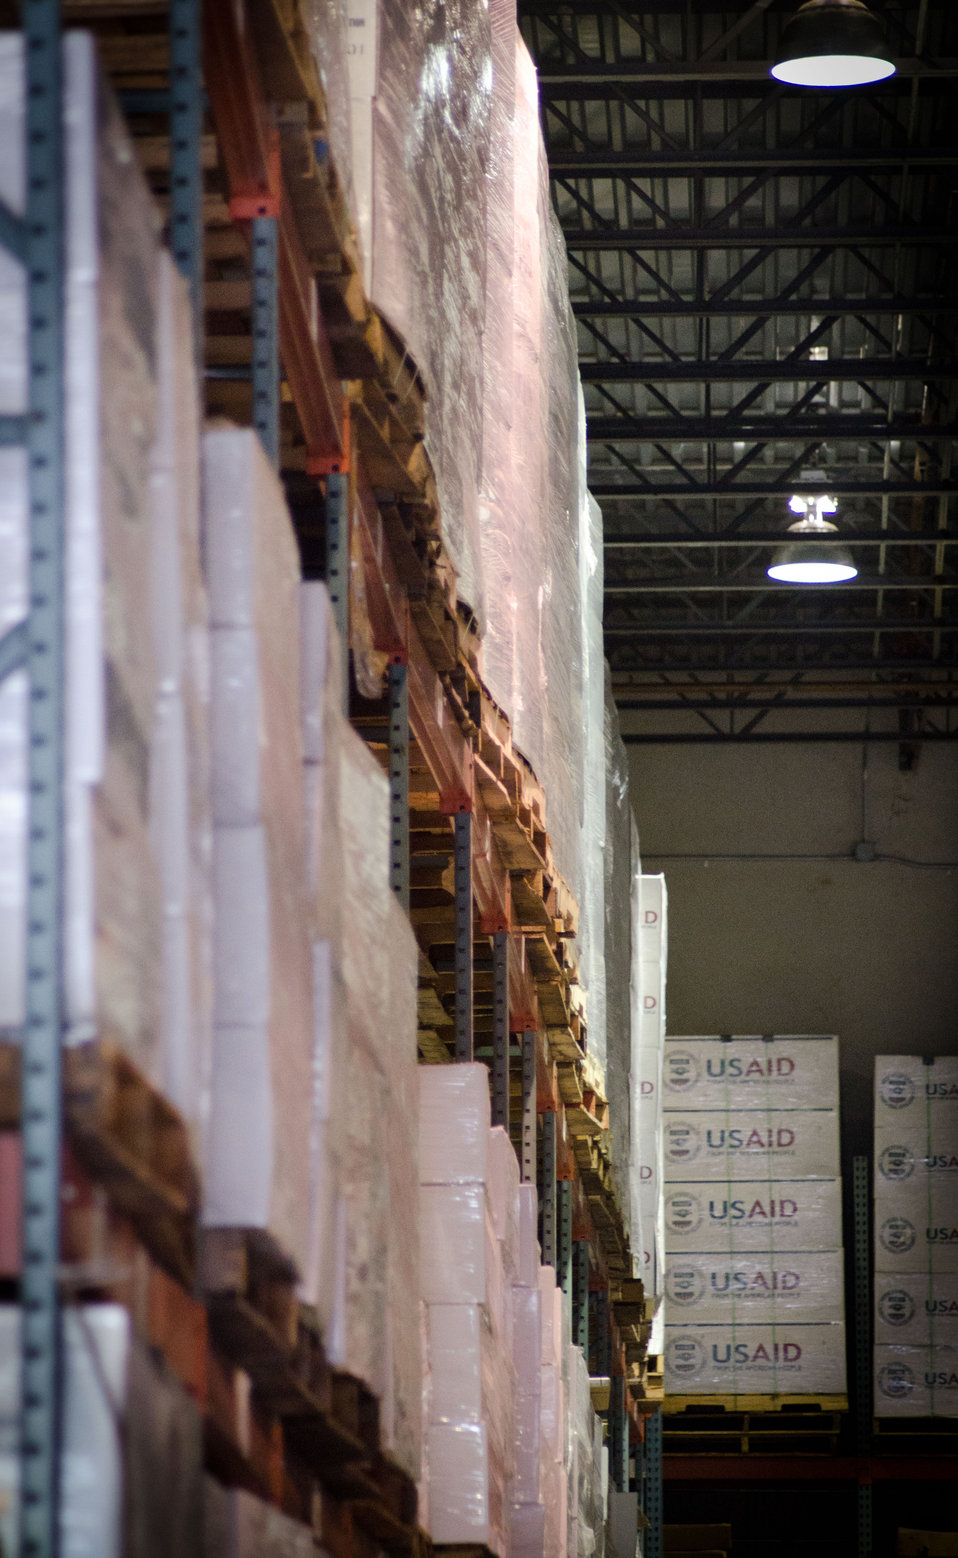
Crowley Logistics in Miami, FL on Friday, August 26, 2011 is one of three U.S. Agency for International Development (USAID) shipping and logistics facilities in the nation. In times of emergency humanitarian relief aid, they can respond with supplies delivered to aircraft at Miami International Airport within two hours. They utilize articulating forklifts, which hinge in the middle to store and retrieve pallets of supplies through narrow aisle ways. This allows for a higher density of stored supplies in the warehouse. Pallets of supplies are stacked three levels high. USAID provides humanitarian assistance through the Office of U.S. Foreign Disaster Assistance (OFDA). OFDA is the lead U.S. Government (USG) office charged with providing and coordinating USG humanitarian assistance in response to international emergencies and disasters. To achieve this, USAID works in cooperation with other USG offices such as the U.S. Department of Agriculture (USDA), and international humanitarian experts. The USDA provides food assistance to support emergency feeding programs in countries experiencing food shortages due to drought and civil conflict.